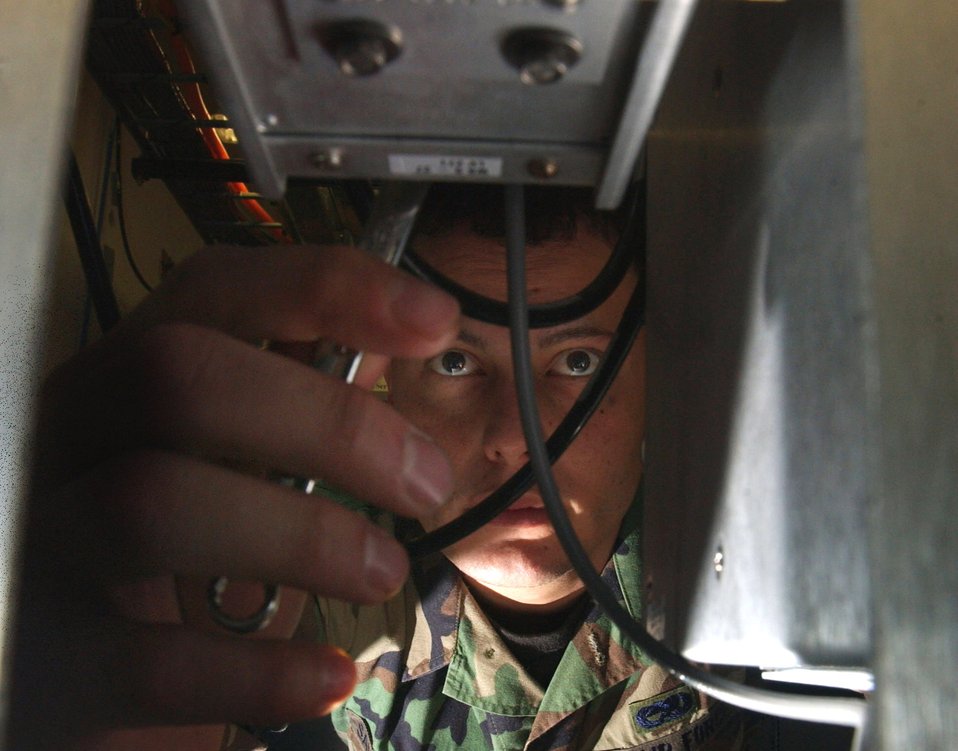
Operation ready

Senior Airman Gabriel Saltar Arocha tightens a bolt onto a radio command center at Aviano Air Base, Italy, Thursday, Feb. 23, 2006. Airman Arocha is with the 31st Communications Squadron.